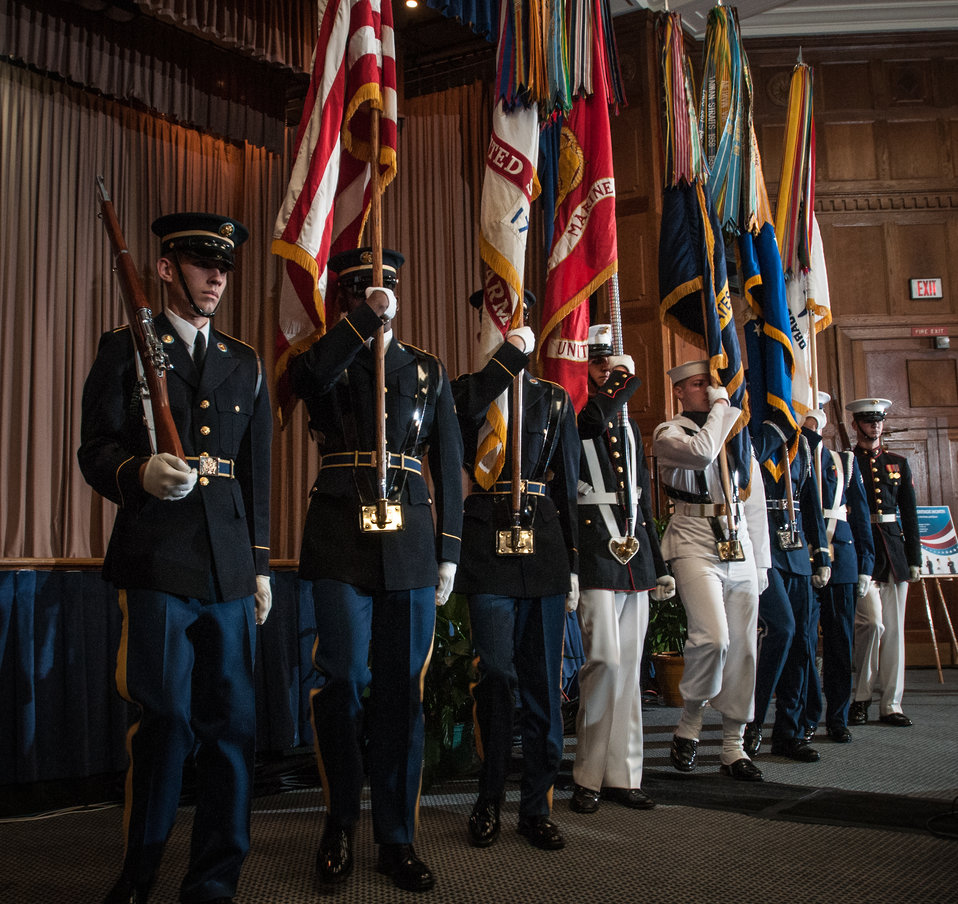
The U.S. Military District of Washington Joint Armed Forces Color Guard present the colors during the U.S. Department of Agriculture (USDA) 2013 National Hispanic Heritage Month ”Hispanics: Serving and Leading our Nation with Pride and Honor,” on Thursday, Sept. 19, 2013, in the Jefferson Auditorium, USDA Headquarters, Washington, D.C.